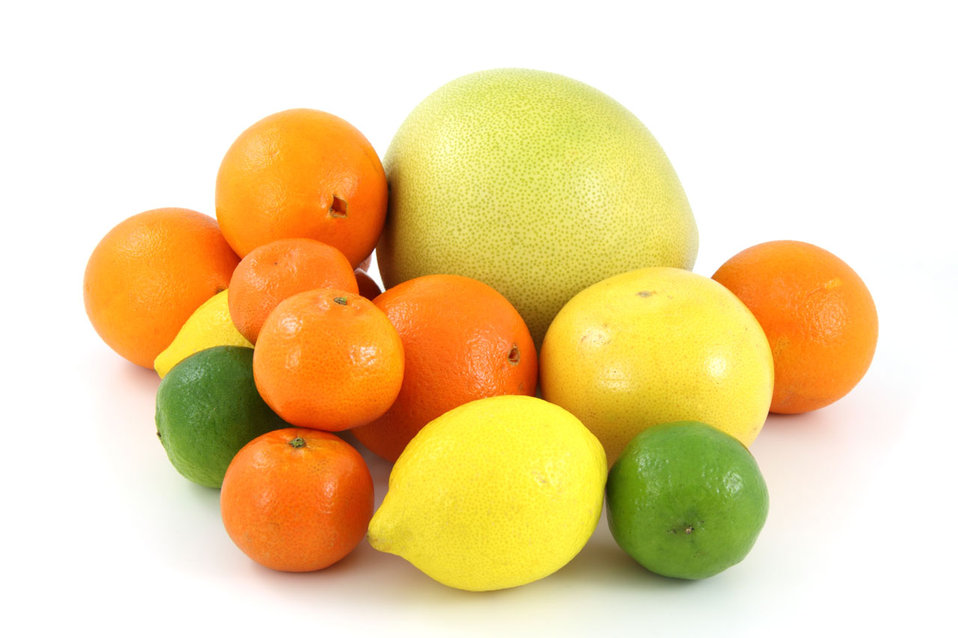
Citrus fruit

Various citrus fruit on white background.